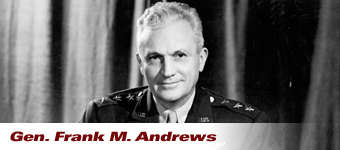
Lt. Gen. Frank M. Andrews

During an inspection tour, Lt. Gen. Frank M. Andrews died in an aircraft crash near Keflavik, Iceland, in 1943. General Andrews was the commanding general of the European Theater of Operations.